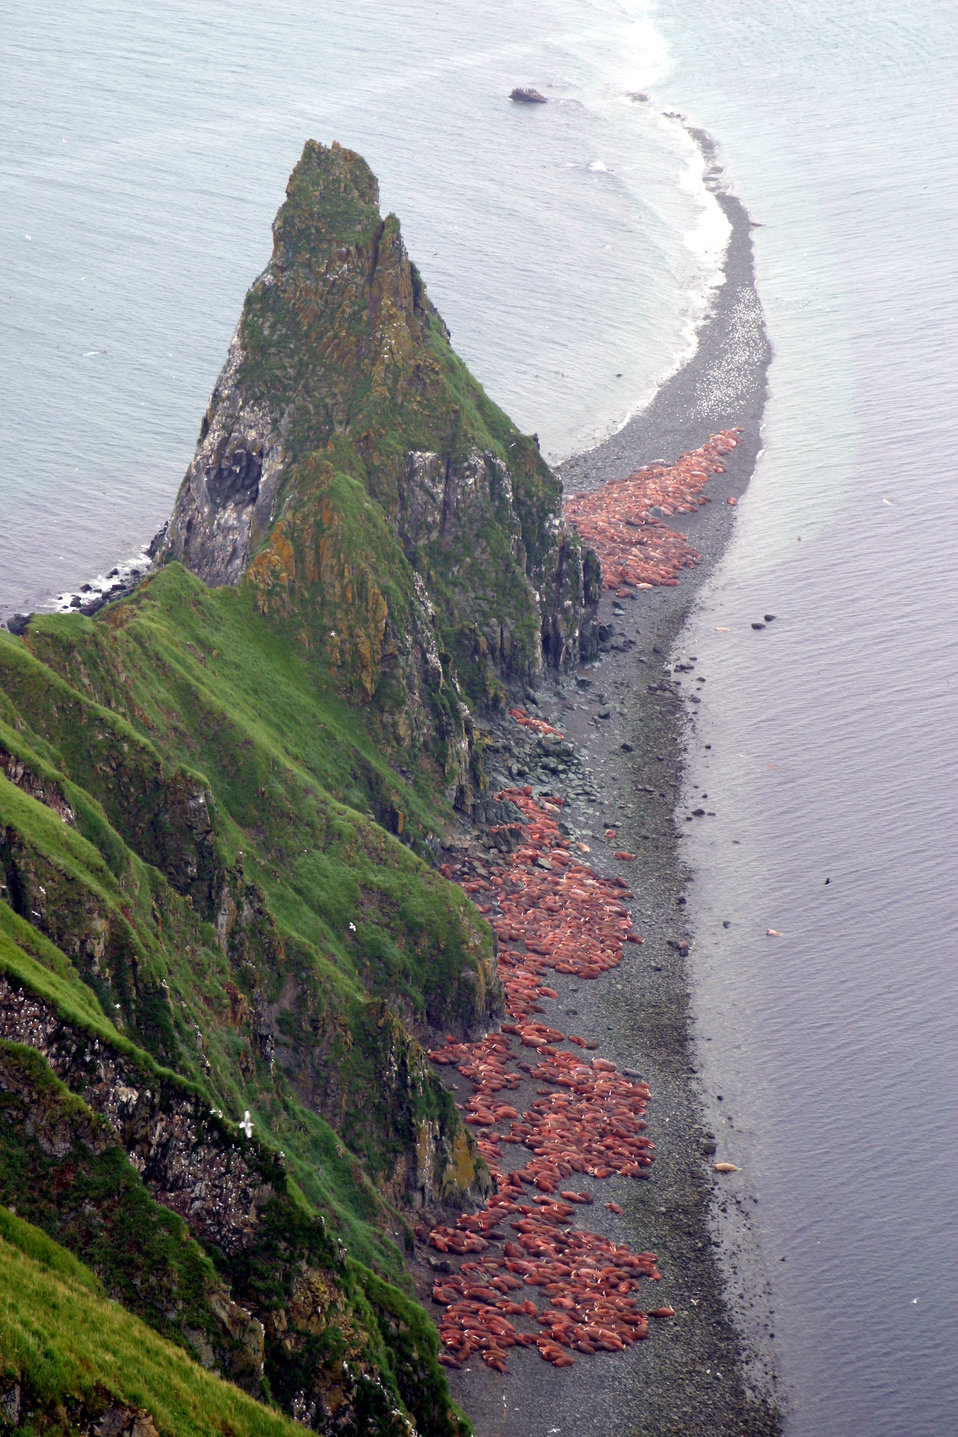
Pacific Walrus Hauled Out on a Round Island Beach

Walrus hauled out on a gravel beach on Round Island, Alaska